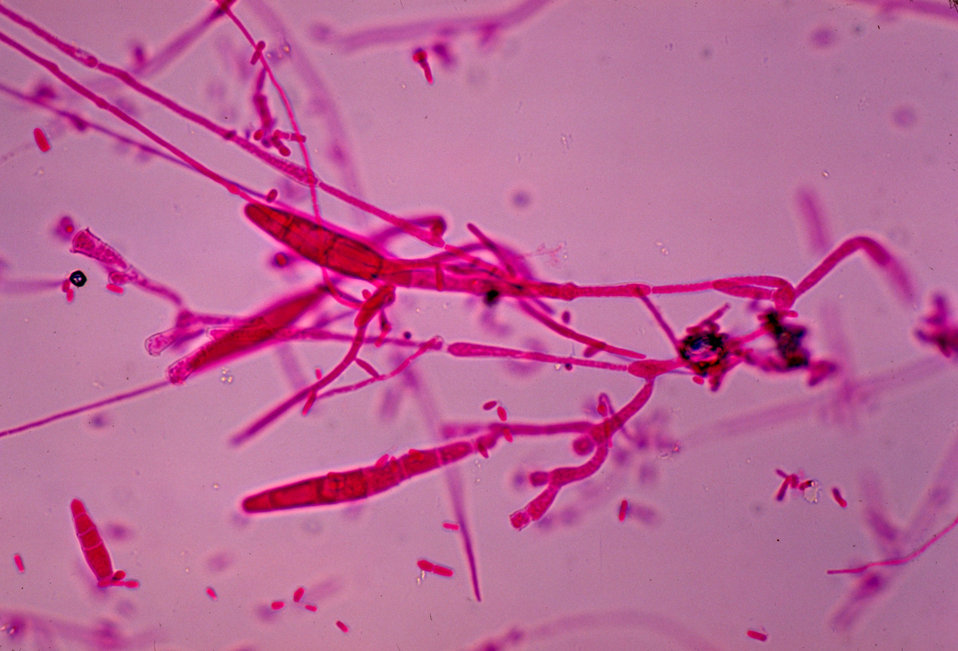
This photomicrograph depicts the microconidia of the fungus Trichophyton mariatii.